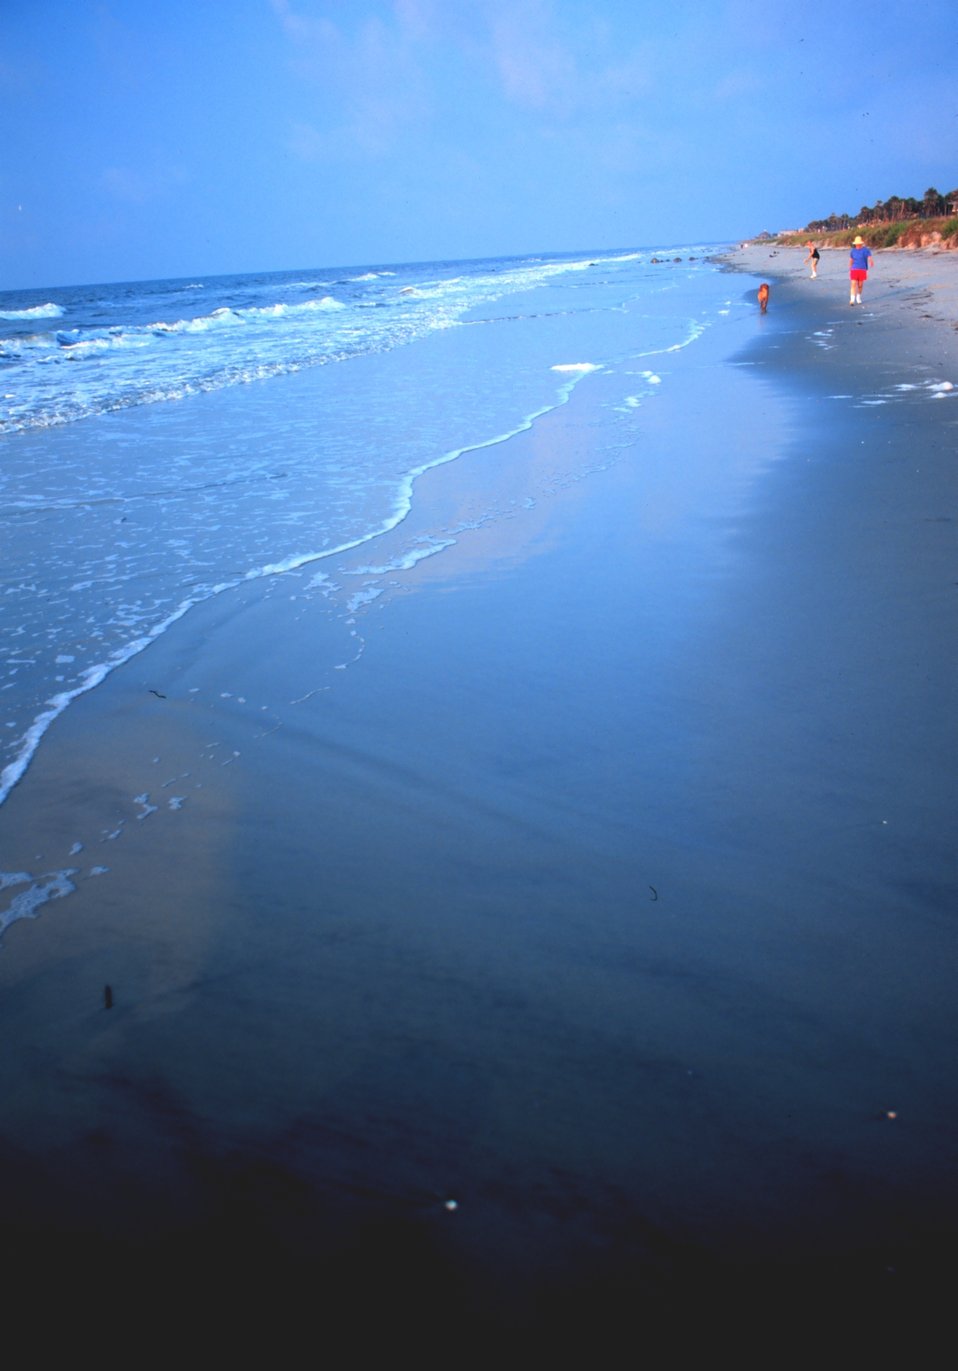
Gentle surf on the Folly Island Beach